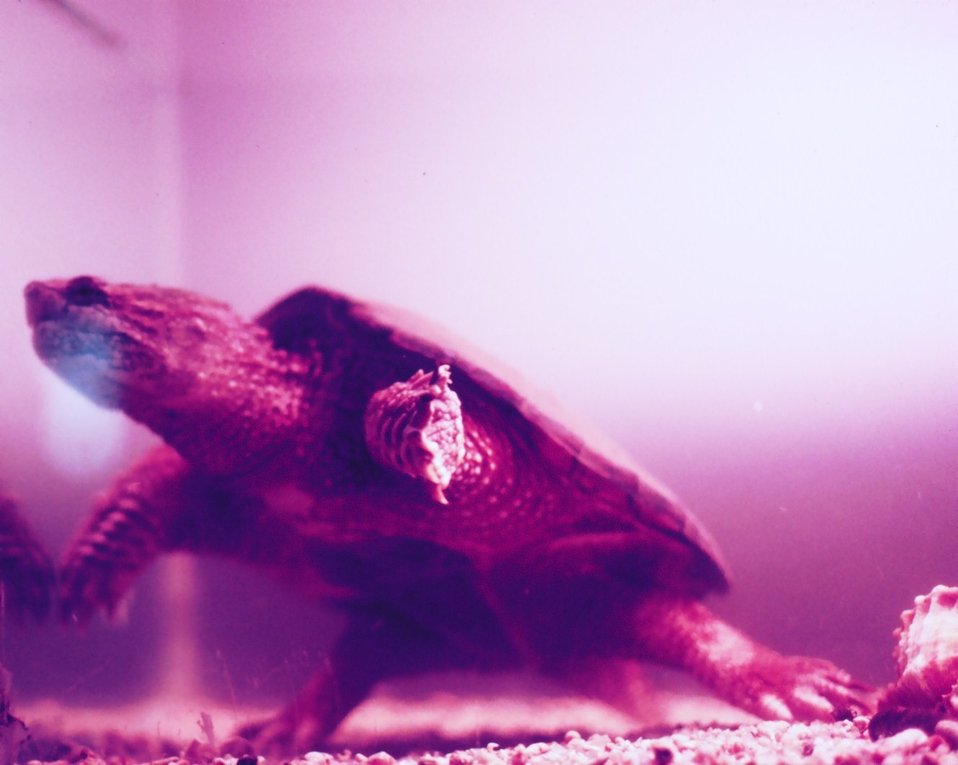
The Snapping turtle, Chelydra serpentina, is easily confused with the alligator snapping turtle. Considered ill-tempered, they feed on invertebrates, fish, reptiles, carrion, etc. and a surprising amount of vegetation. These turtles trapped in the fresh and brackish waters of bay tributaries and sold to restaurants for use in soups and stews.